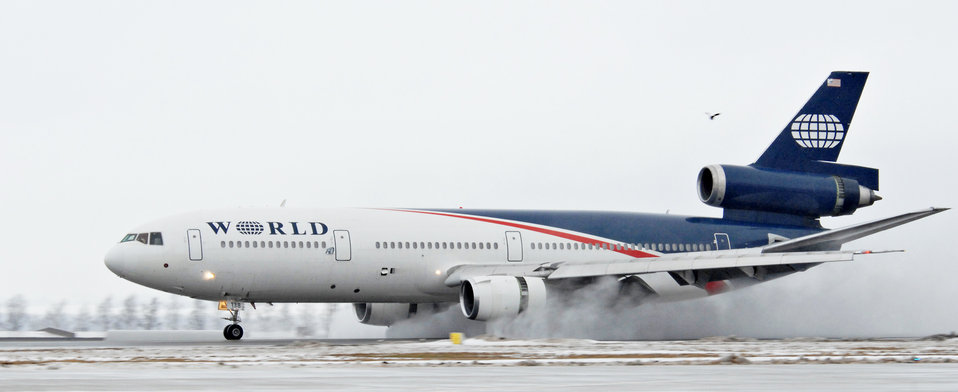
Spangdahlem team returns home

An aircraft carrying more than 300 Airmen lands Feb. 5, 2010, at Spangdahlem Air Base, Germany. The are returning to Spangdahlem after a four-and-a-half month deployment to Joint Base Balad, Iraq, in support of Operation Iraqi Freedom.